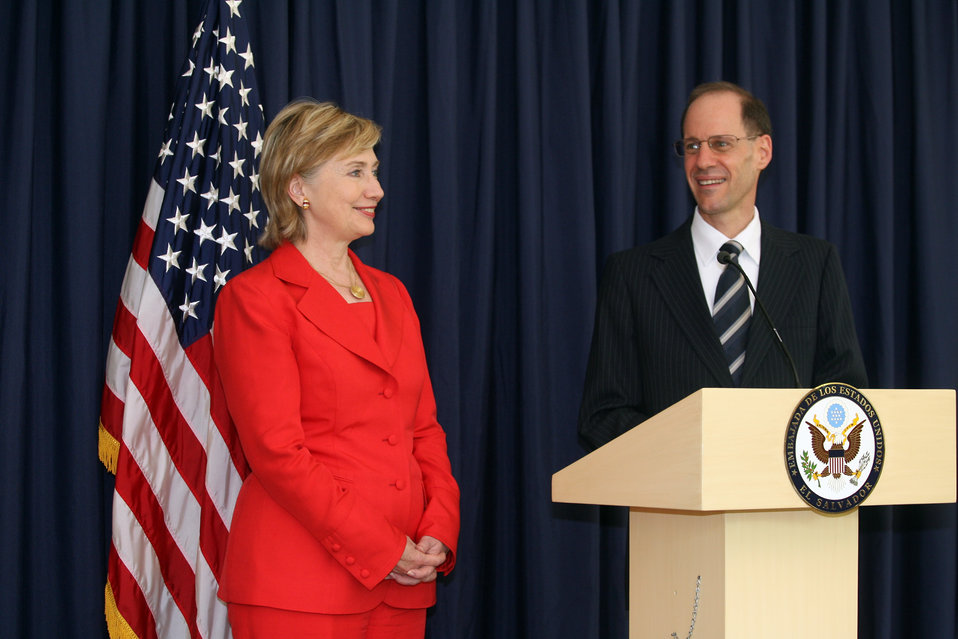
Photo Exhibit: “The United States and El Salvador, An Enduring Relationship'

U.S. Charge d’Affairs Robert Blau introduces U.S. Secretary of State Hillary Rodham Clinton at the ribbon cutting ceremony for the photo exhibition entitled “The United States and El Salvador, An Enduring Relationship' in San Salvador, El Salvador June 1, 2009.